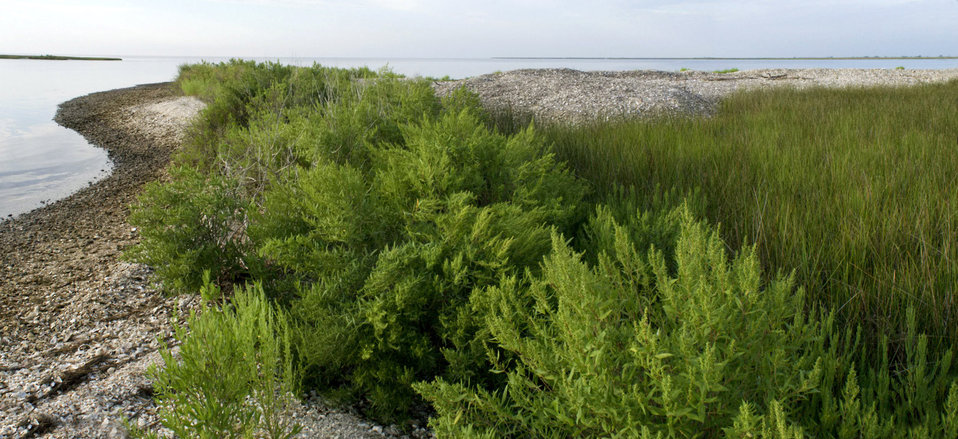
Shell middens at Grand Bay

Ancient shell middens at Grand Bay National Wildlife Refuge are testament to the historic use of the coastal area. Cultural resources like these are under threat to rising sea levels.